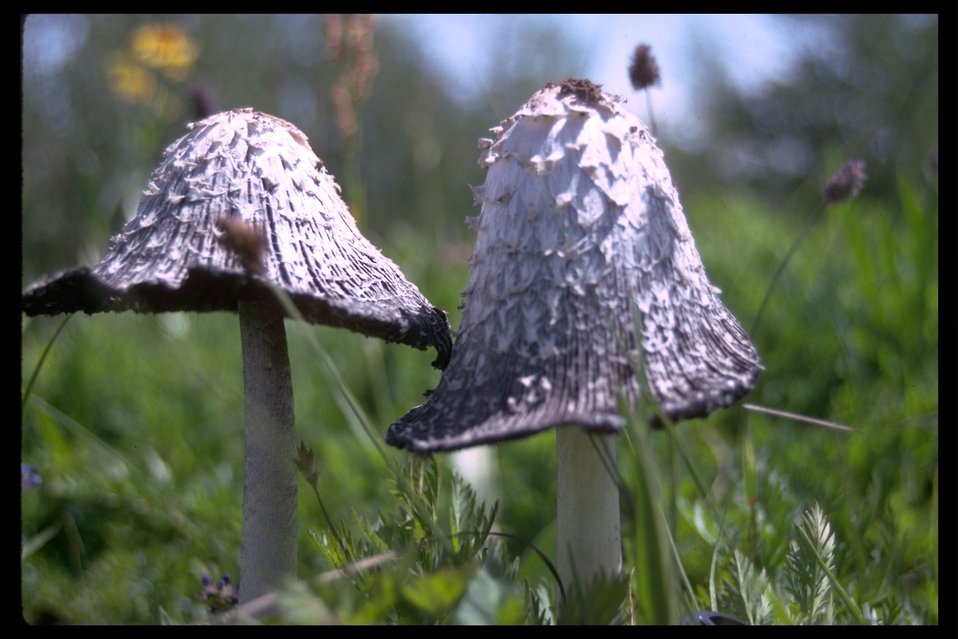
Mushrooms on the steens.